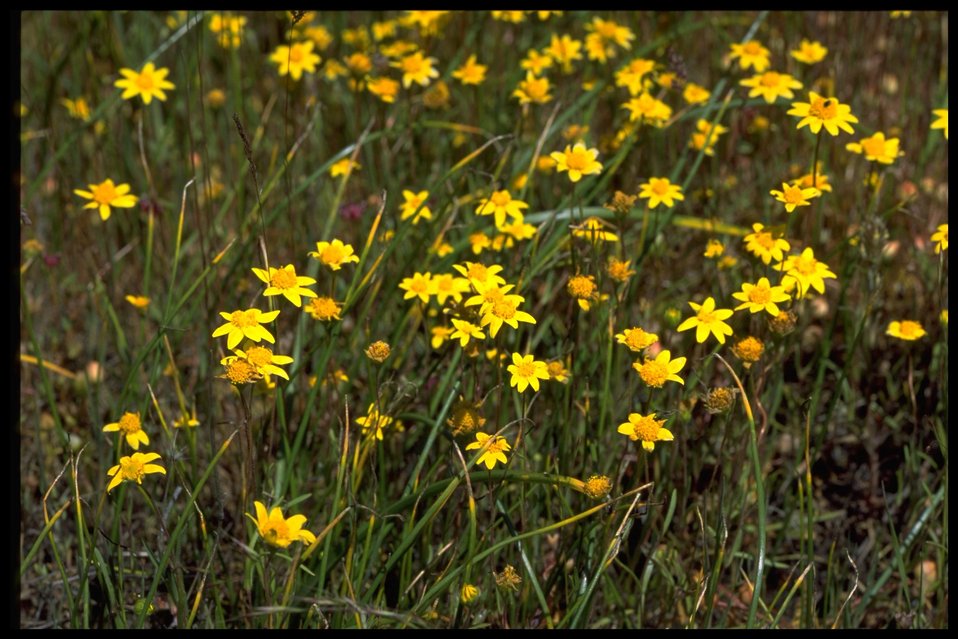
Farshot of Lasthenia californica.